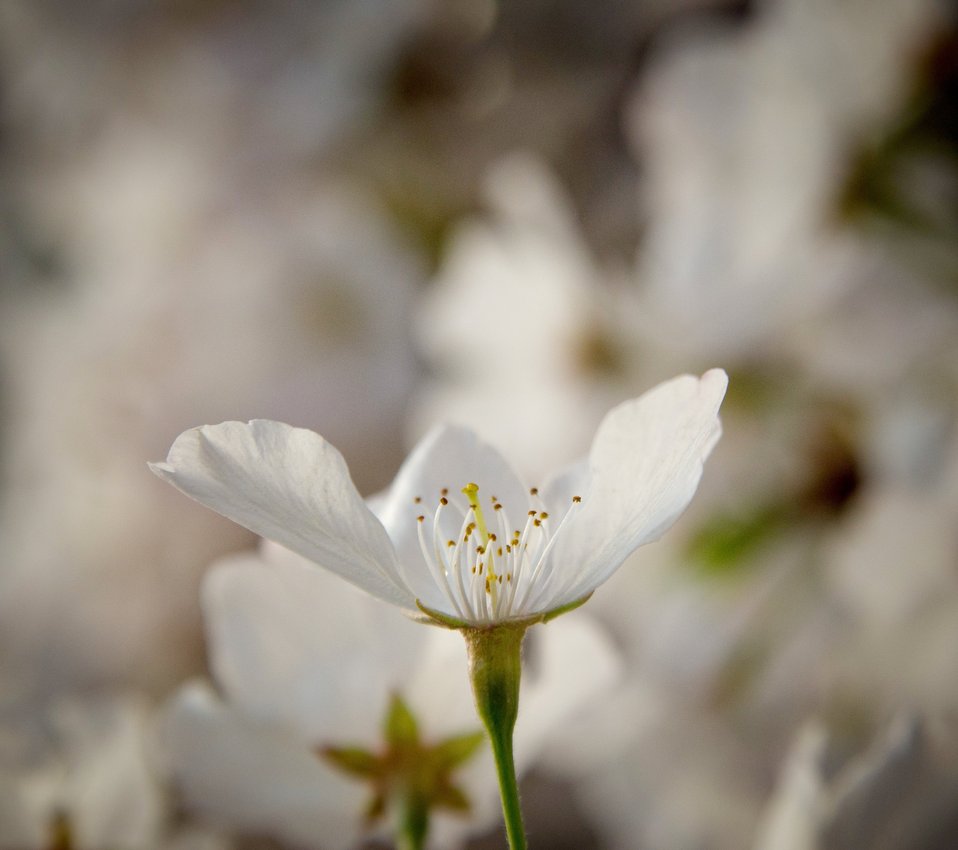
Cherry blossoms at the Tidal Basin in Washington, D.C., on Tuesday, March 20, 2012.